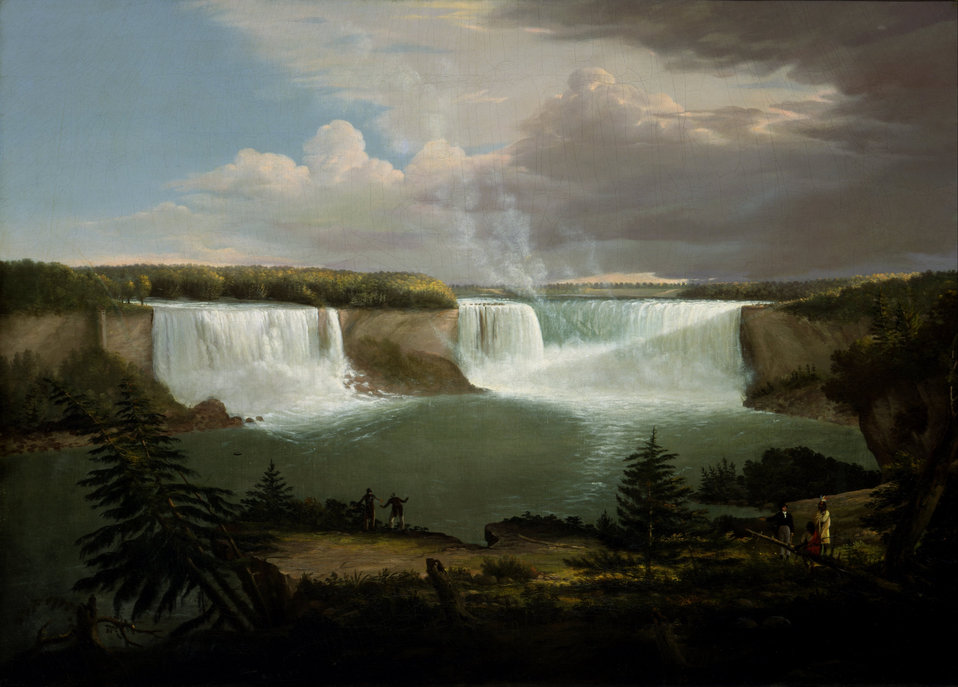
Alvan Fisher - A General View of the Falls of Niagara - Google Art Project